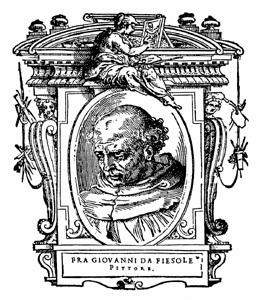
Illustratio from 'Le Vite' by Giorgio Vasari, edition of 1568. For the artist portrayed see filename